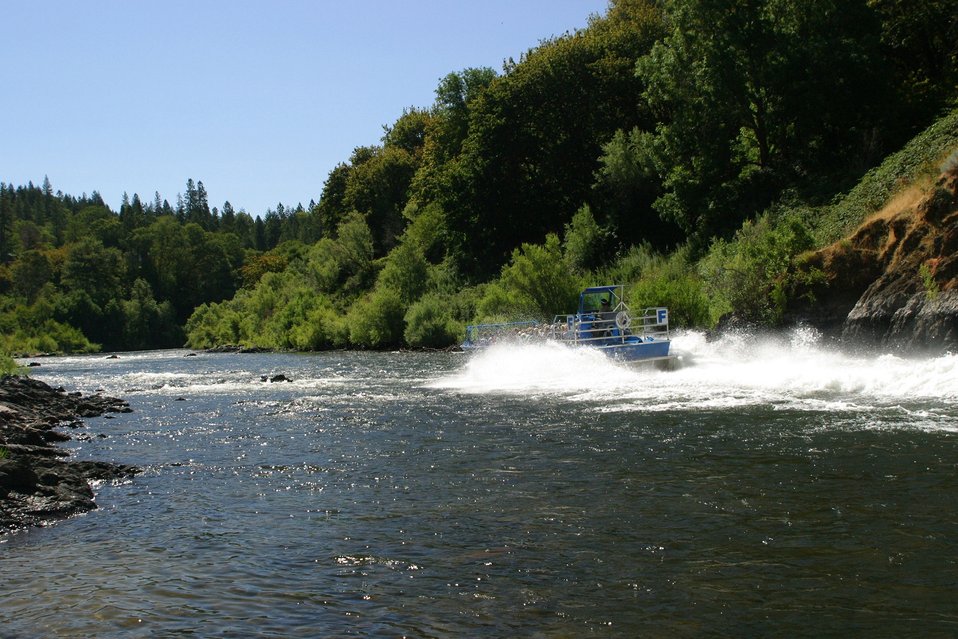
A jet boat returning to Grants Pass just below Hog Creek.